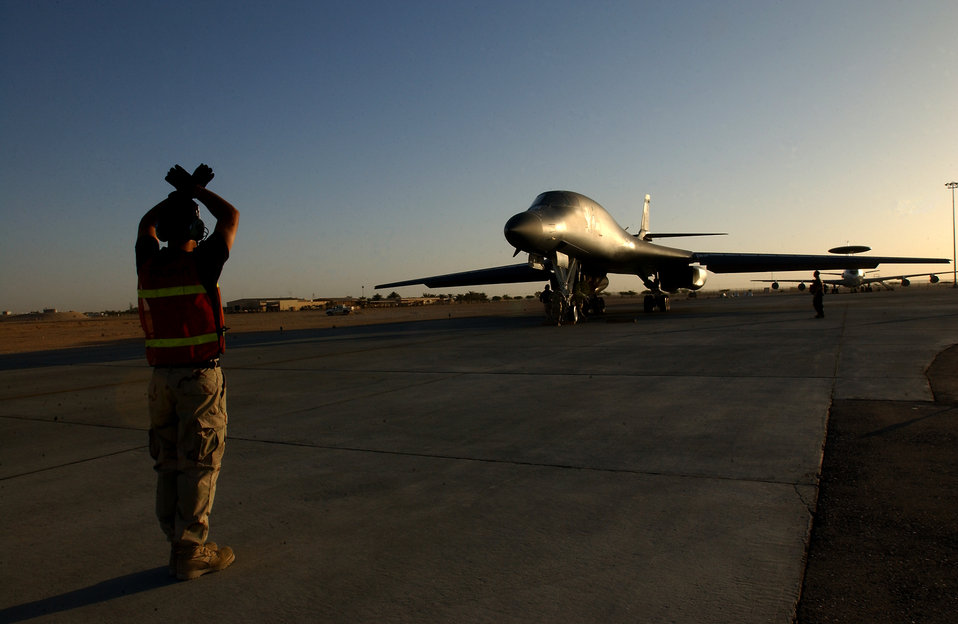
Lancer lingo

OPERATION ENDURING FREEDOM (AFPN) -- Airman 1st Class Phil Roy talks with a B-1B Lancer aircrew before a recent mission. Roy is a crew chief from the 28th Expeditionary Aircraft Maintenance Squadron at a forward-deployed location. Maintenance crews work 12-hour shifts, seven days a week. Their duties include washing, refueling, inspecting, repairing and servicing all systems of the B-1B.